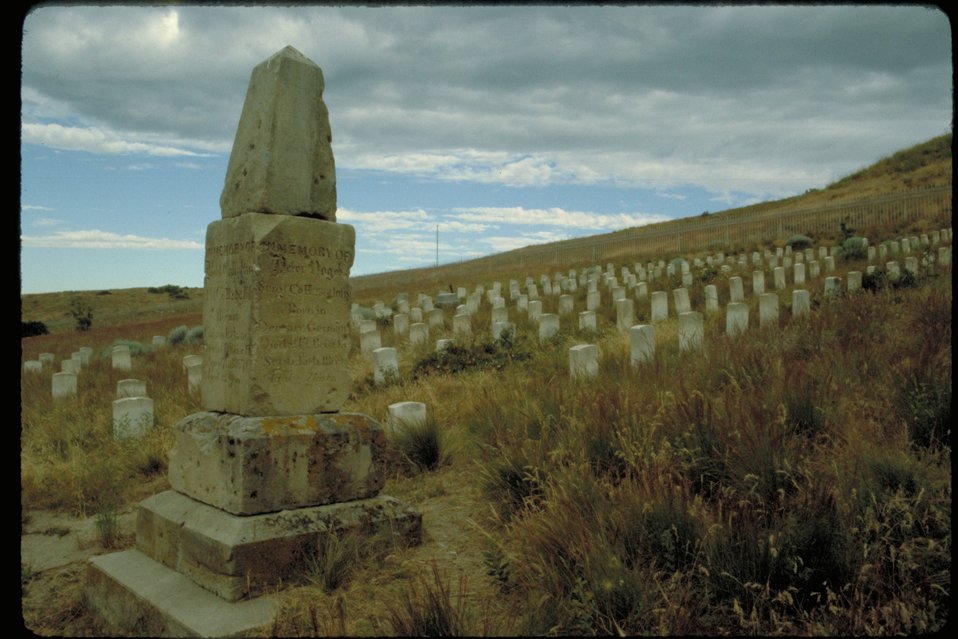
Fort Boise Cemetery Oregon Trail Lower Snake River District